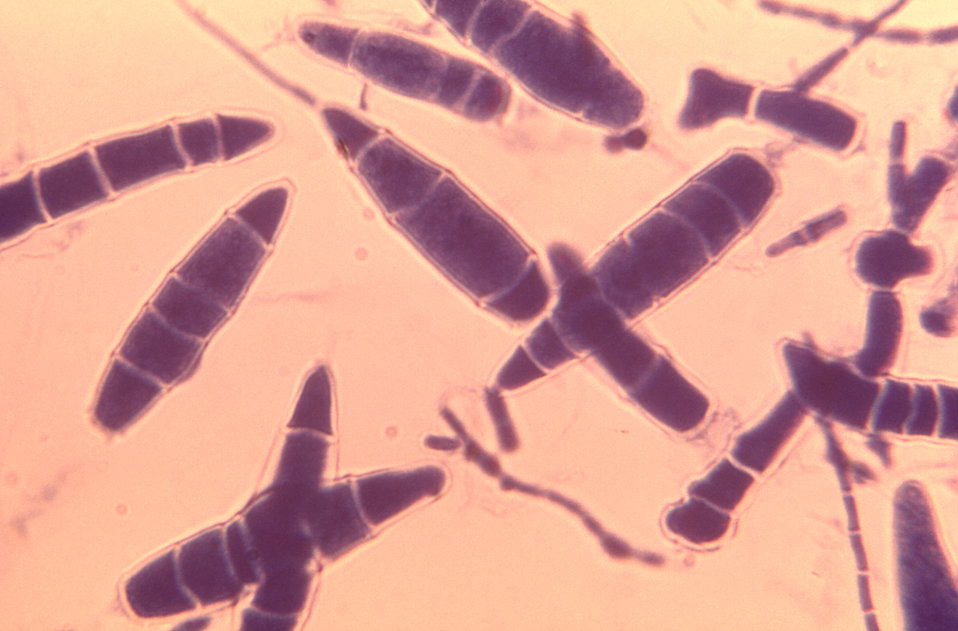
Under a high magnification of 970X, this photomicrograph depicted some of the ultrastructural features of numerous oblong-shaped Microsporum gypseum macroconidia from what is known as a red, powdery, mutant strain.